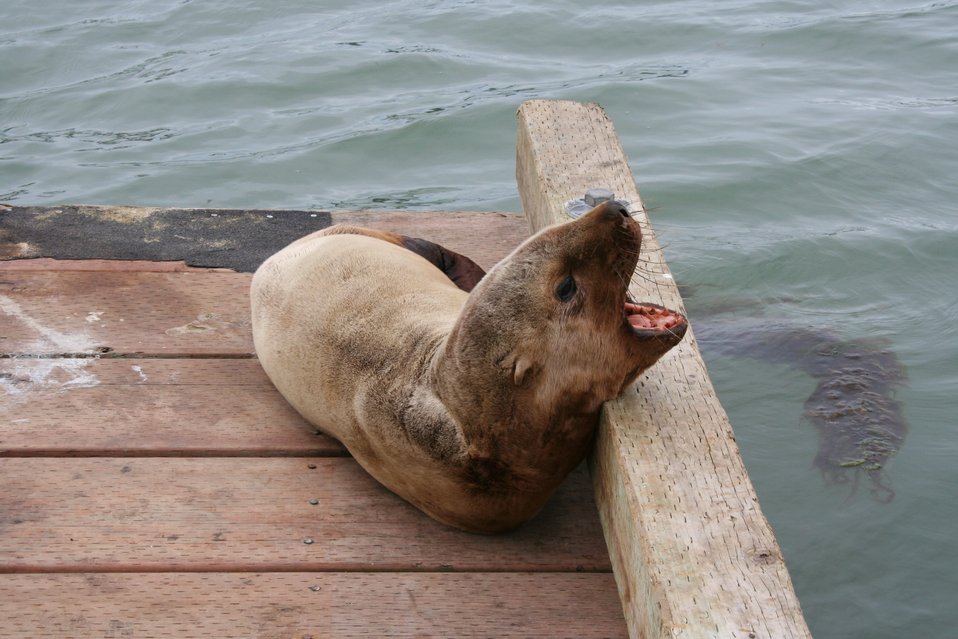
A sick juvenile Steller sea lion hauled out on a public boat ramp (captured and sent to the Alaska SeaLife Center for rehabilitation; released successfully in September 2006.